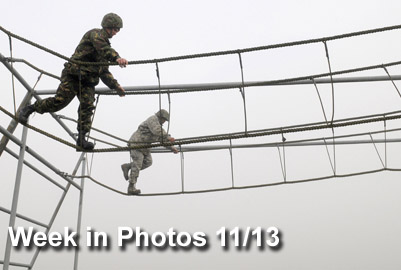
Week in Photos

Air Force Week in Photos for Nov. 13 highlights photos from around the Air Force. In this photo by Senior Airman Thomas Trower, a British airman and 1st Lt. Xzavior Hill, 100th Civil Engineer Squadron, traverse a rope bridge as part of the Ultimate Challenge 2 at Royal Air Force Marham, England, Nov. 9, 2009.